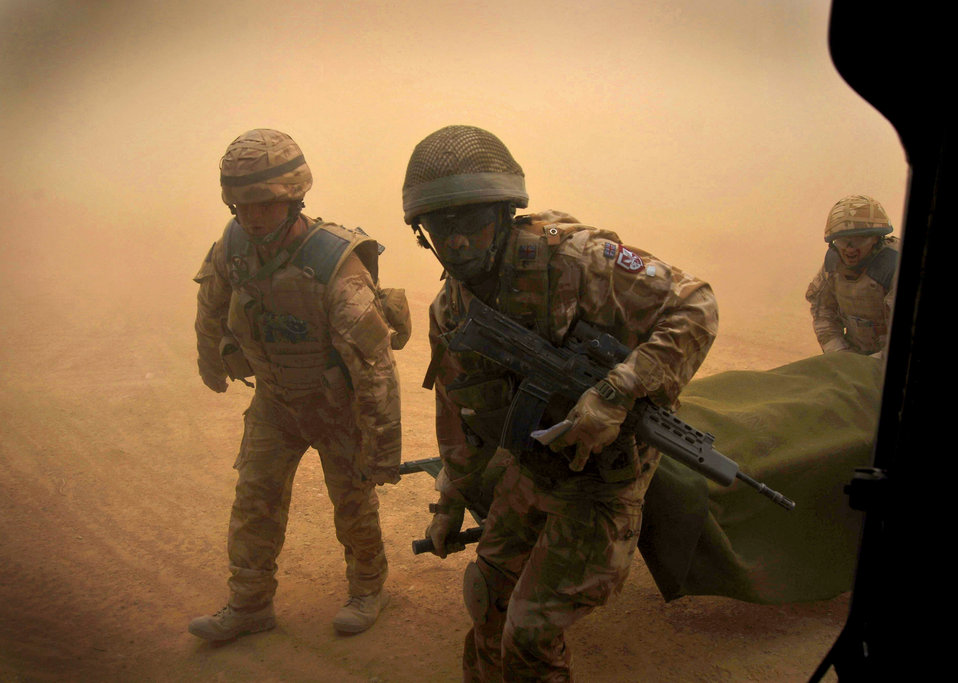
Squadron highlights capabilities during Afghan rescue mission

Pararescuemen receive an injured patient from coalition forces Dec. 8, 2009. The pararescuemen will administer medical care while in transit to a medical facility. The pararescuemen are assigned to the 66th Expeditionary Rescue Squadron deployed to Camp Bastion, Afghanistan.